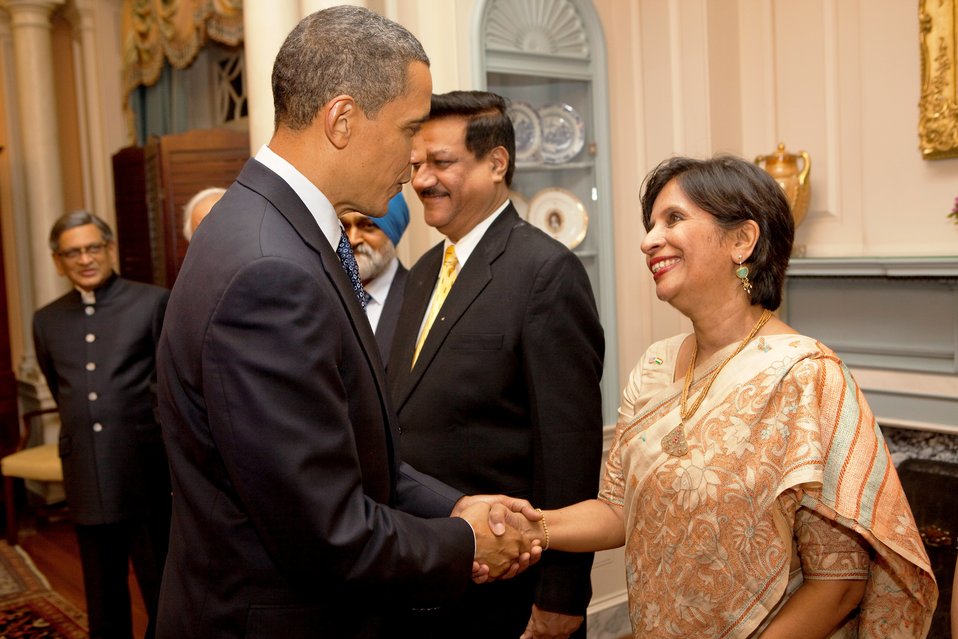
President Obama Shakes Hands With High-Ranking Indian Delegation Member

U.S. President Barack Obama shakes hands with a high-ranking member of the Indian Delegation at the U.S.-India Strategic Dialogue reception at the U.S. Department of State in Washington, D.C., on June 3, 2010.